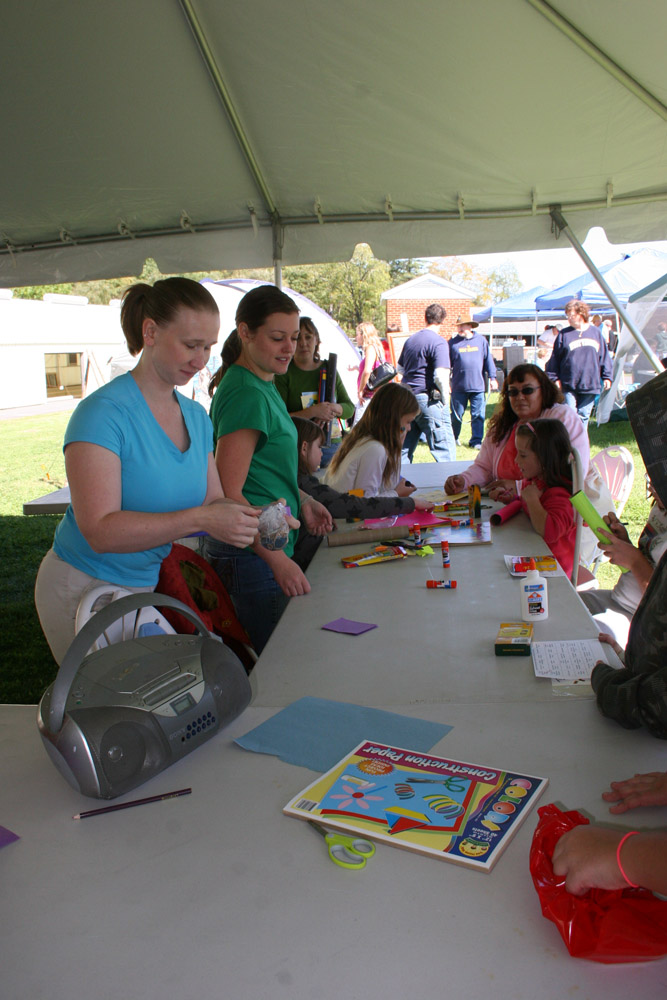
Freshwater Folk Festival

The 5th Annual Freshwater Folk Festival at White Sulphur Springs National Fish Hatchery in West Virginia.Credit: USFWS